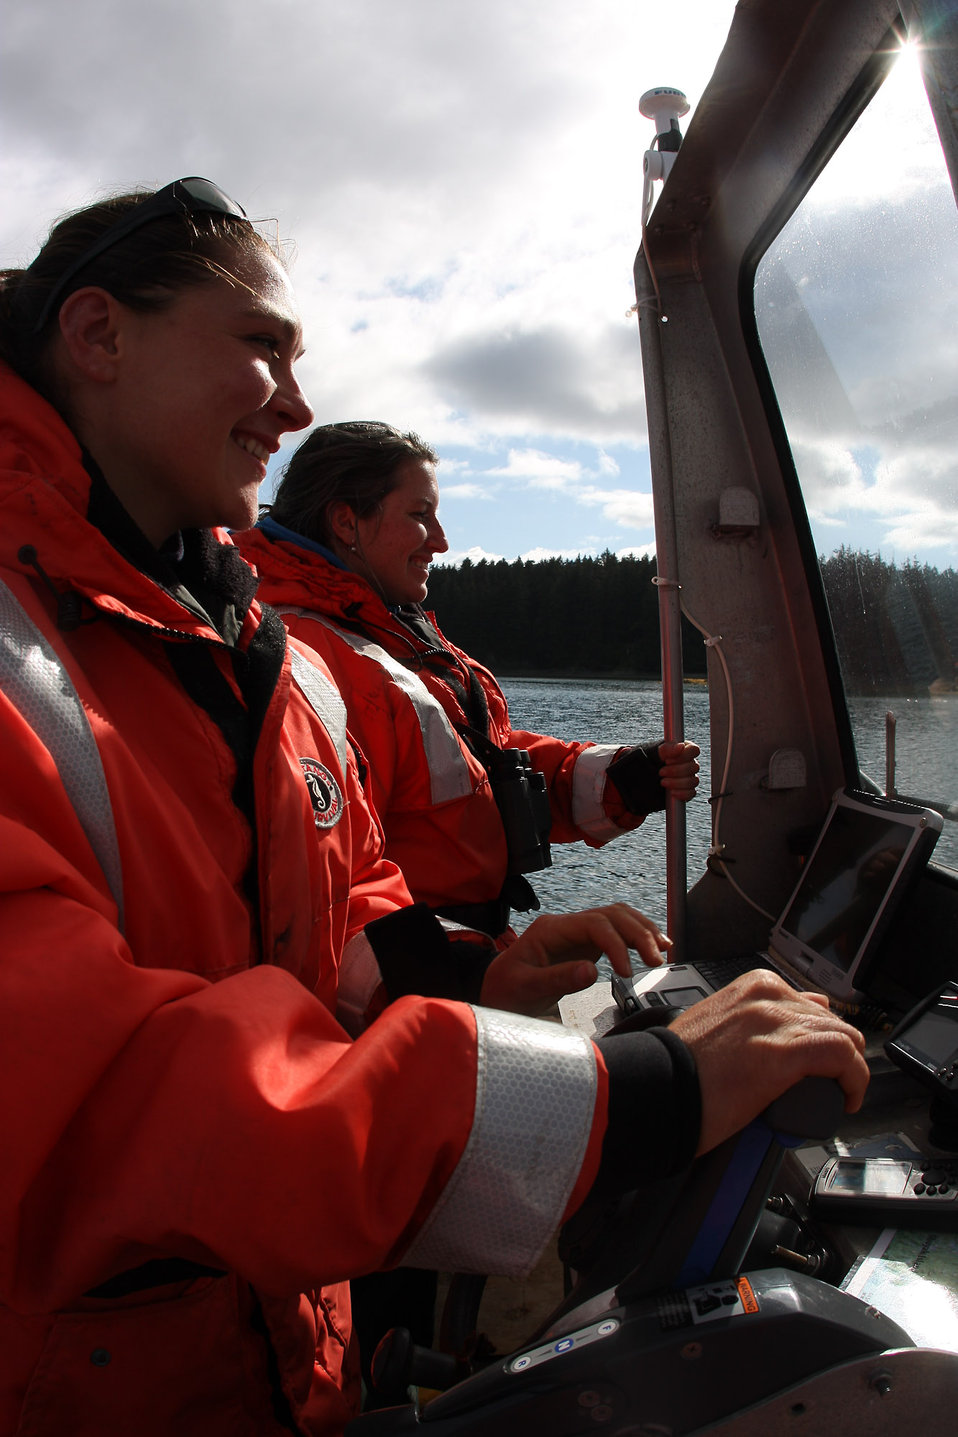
Volunteers conduct seabird surveys by skiff

Photo Credit: Lisa Hupp/USFWS
Source: Kodiak NWR